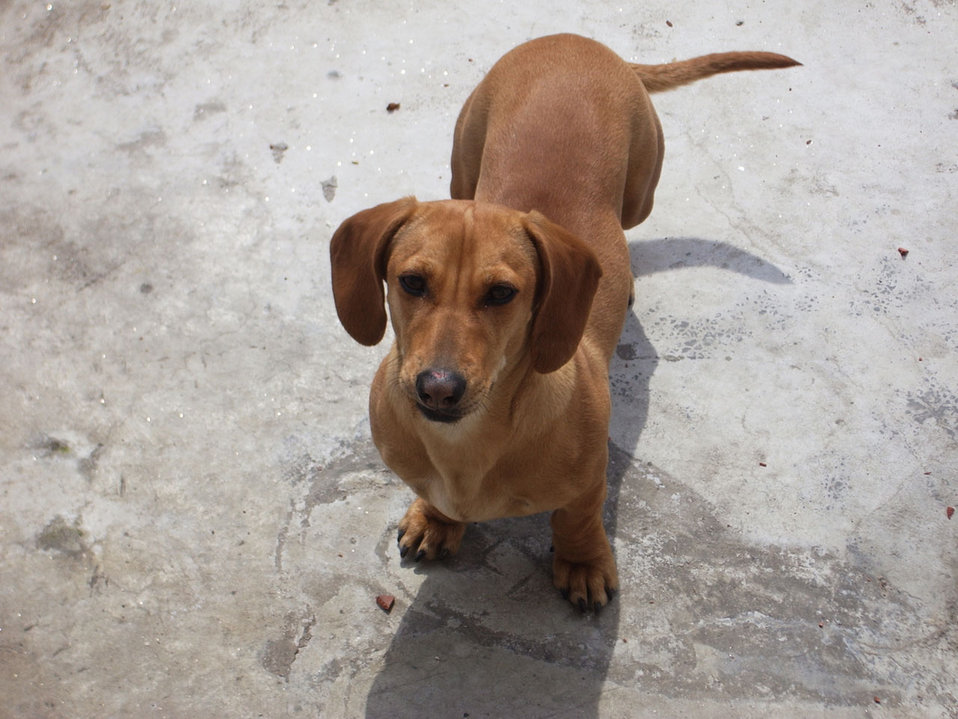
Dog

Delta the dog.